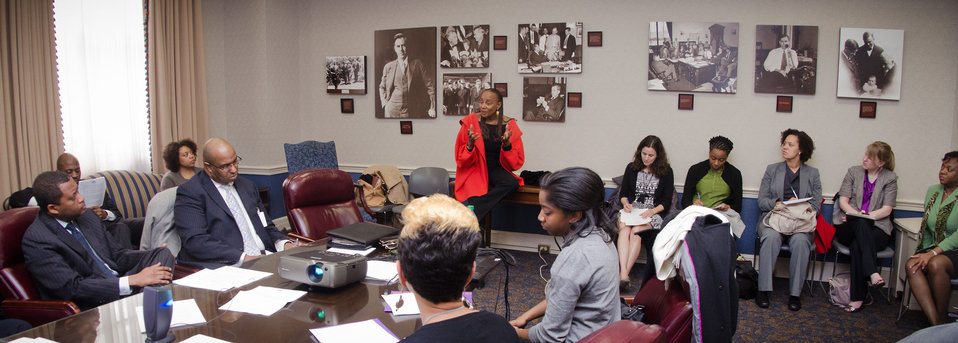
National CARES Mentoring Movement founder and Editor-in-Chief Emeritus, Essence magazine, Susan Taylor (red coat), met for a cross-departmental discussion with Department of Agriculture and Department of Energy personnel in the Whitten Building, U.S. Department of Agriculture, in Washington, D.C., on Tuesday, February 28, 2012. This not-for-profit organization is dedicated to recruiting and connecting mentors with local youth and mentoring organizations to help guide under-resourced children to academic and social success across the country. This discussion provided a continuation of the White House Policy in Action conference that took place in November 2011. The focus of the discussion was about how existing federal programs and administration priorities can be leveraged with her organization, especially as it relates to science, technology, engineering and mathematics (STEM) literacy, education and rural youth.